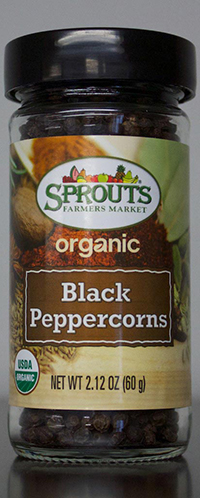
RECALLED – Organic Black Peppercorns

April 4, 2014 – Product Recall – Sprouts Farmers Market Recalls Organic Black Peppercorns Due to Possible Health Risk.